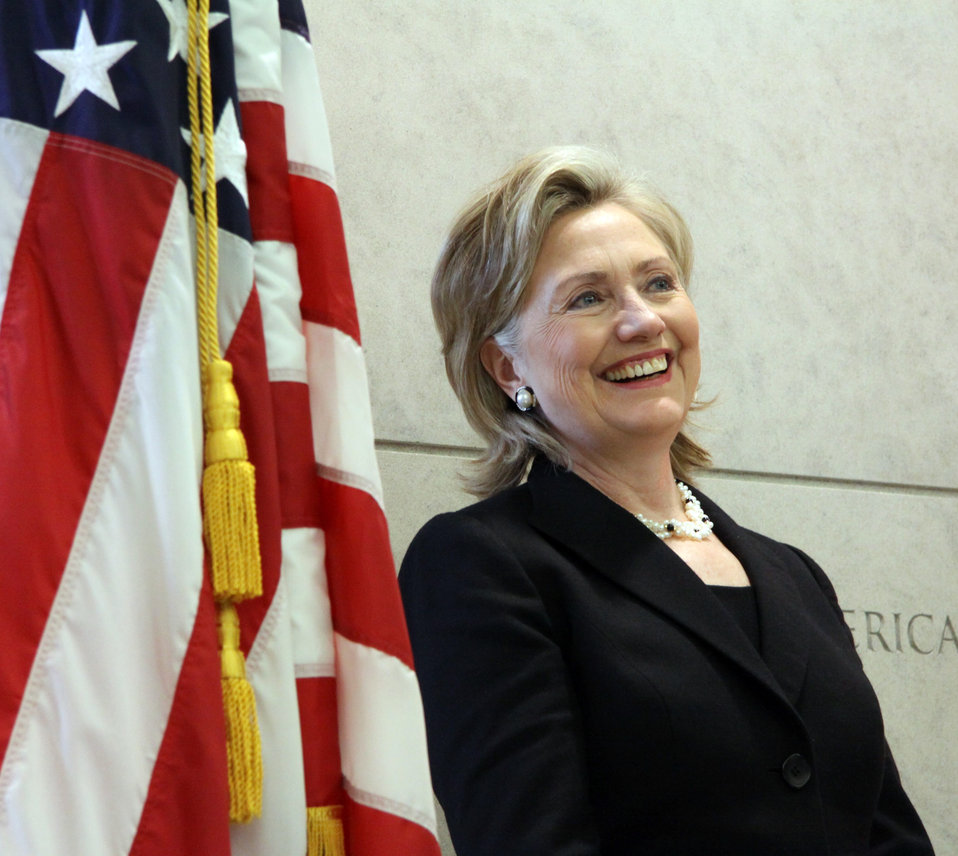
Secretary Clinton Speaks at U.S. Embassy in Ottawa

U.S. Secretary of State Hillary Rodham Clinton speaks at the U.S. Embassy in Ottawa, Canada during the G8 Foreign Ministers Meeting in Ottawa, Canada March 29, 2010.